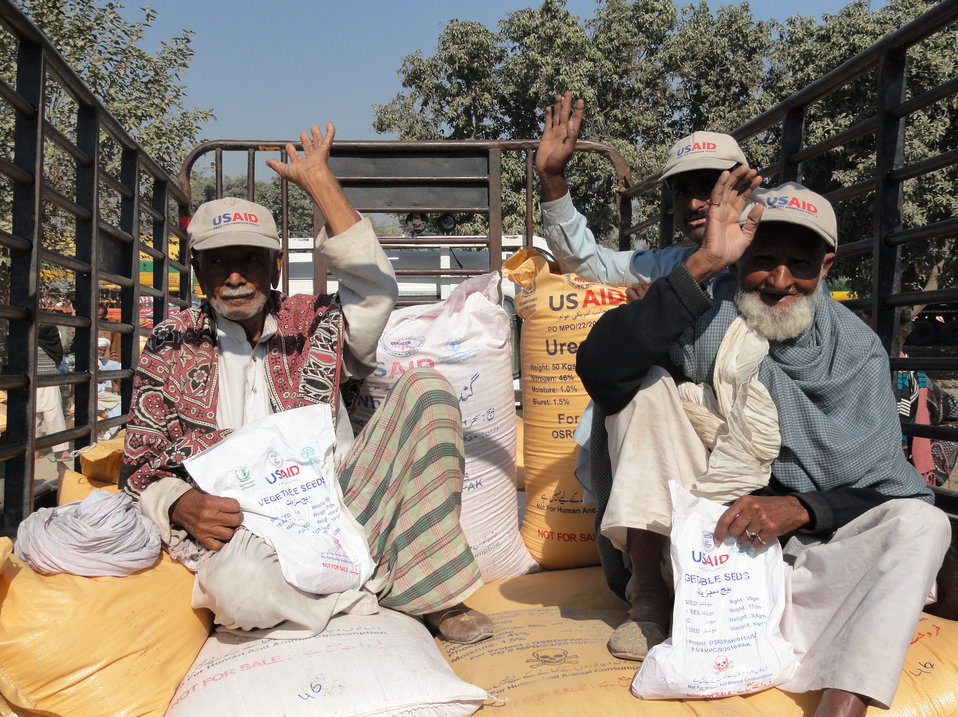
Wheat and Vegetable Seeds

December 3, 2010 - Happy farmers in Punjab province take their 50 kg sacks of wheat and vegetable seeds, as well as fertilizer, back to their family farms in time for the winter wheat season. USAID's $62 million program post-flood wheat distribution program has distributed wheat, vegetable seeds and fertilizer to 167,300 households in Khyber Pakhtunkhwa and 65,000 households (one fourth of the total number) in Punjab.